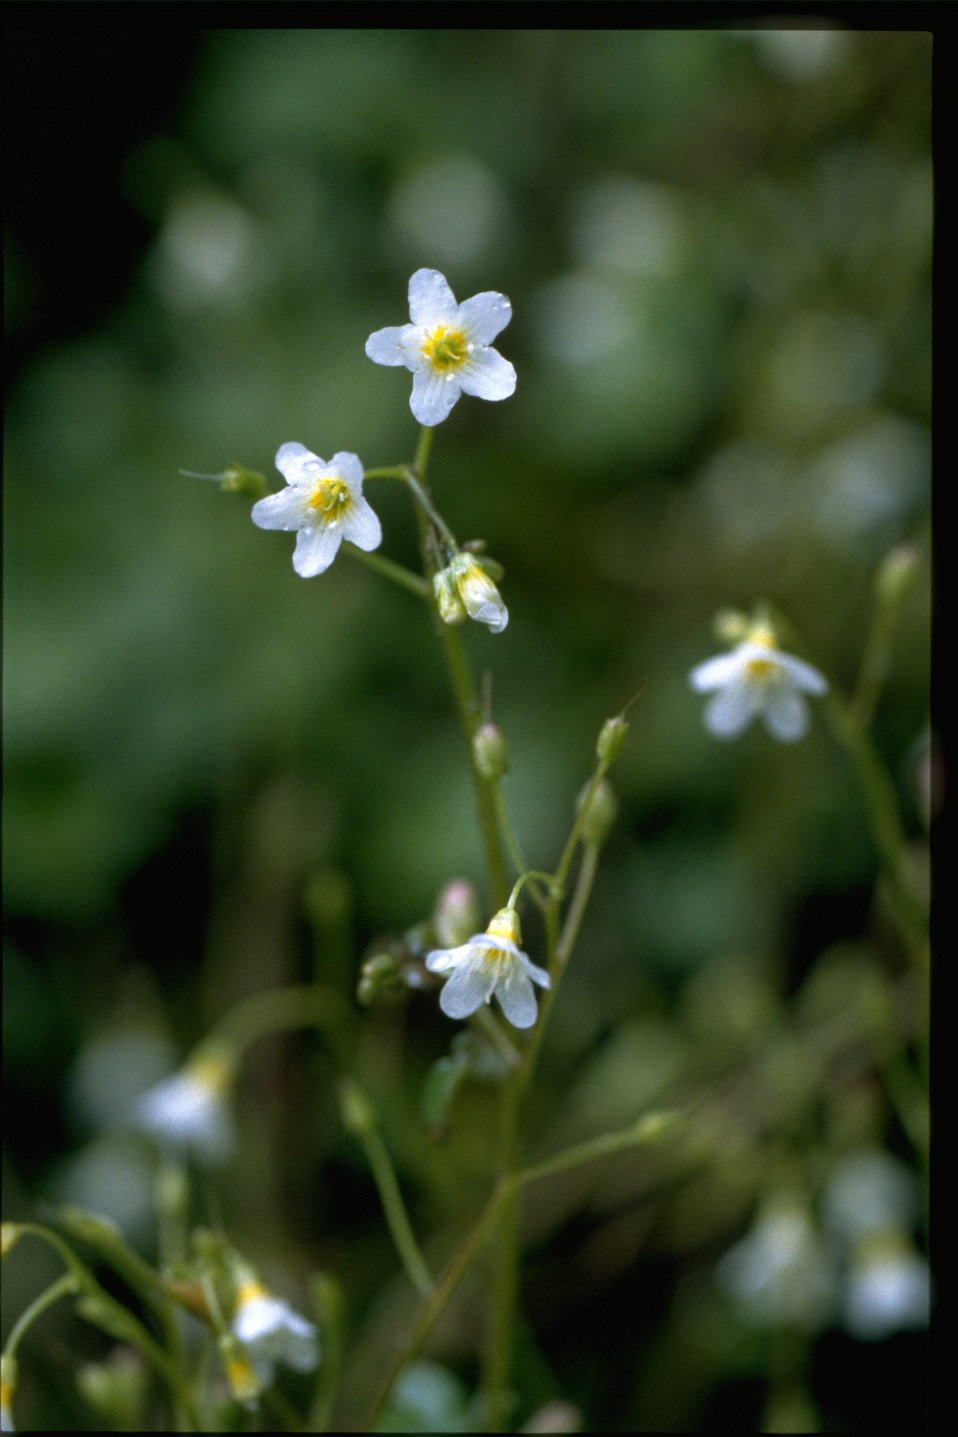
Closeup shot of Romanzoffia sitchensis.